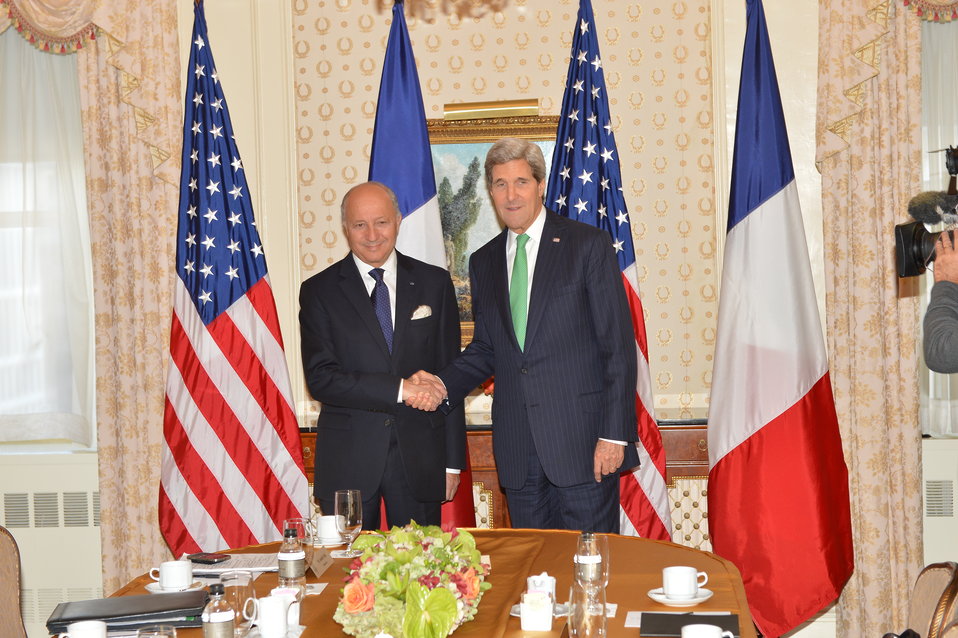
Secretary Kerry Meets With French Foreign Minister Fabius

U.S. Secretary of State John Kerry holds a bilateral meeting with French Foreign Minister Laurent Fabius in New York City on September 25, 2013.